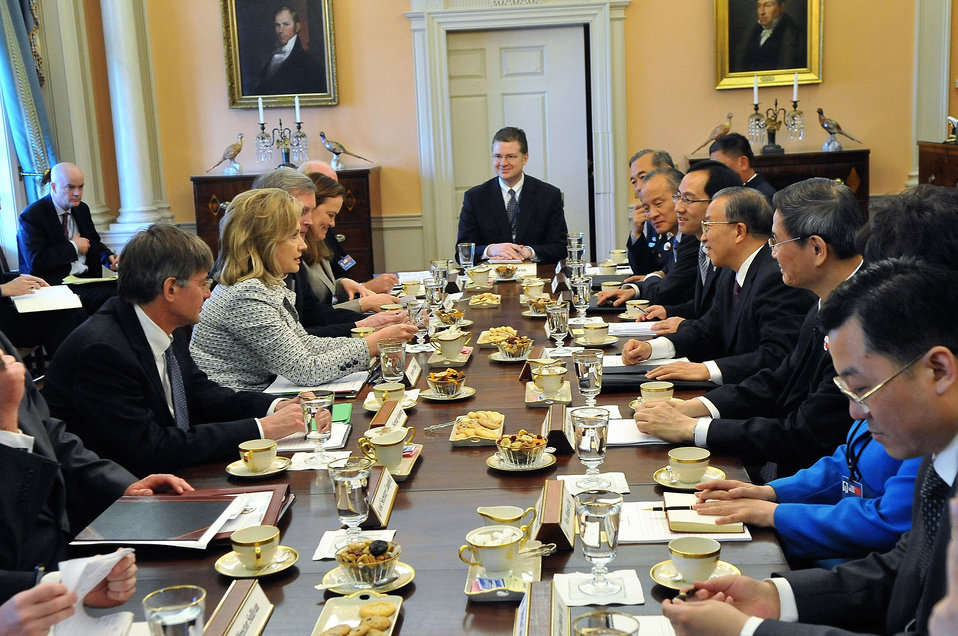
Secretary Clinton Hosts Working Luncheon With Chinese State Councilor Dai Bingguio

U.S. Secretary of State Hillary Rodham Clinton hosts a working luncheon with Chinese State Councilor Dai Bingguo and participants in the U.S.-China Strategic and Economic Dialogue Strategic Track, at the U.S. Department of State in Washington, D.C., on May 9, 2011.